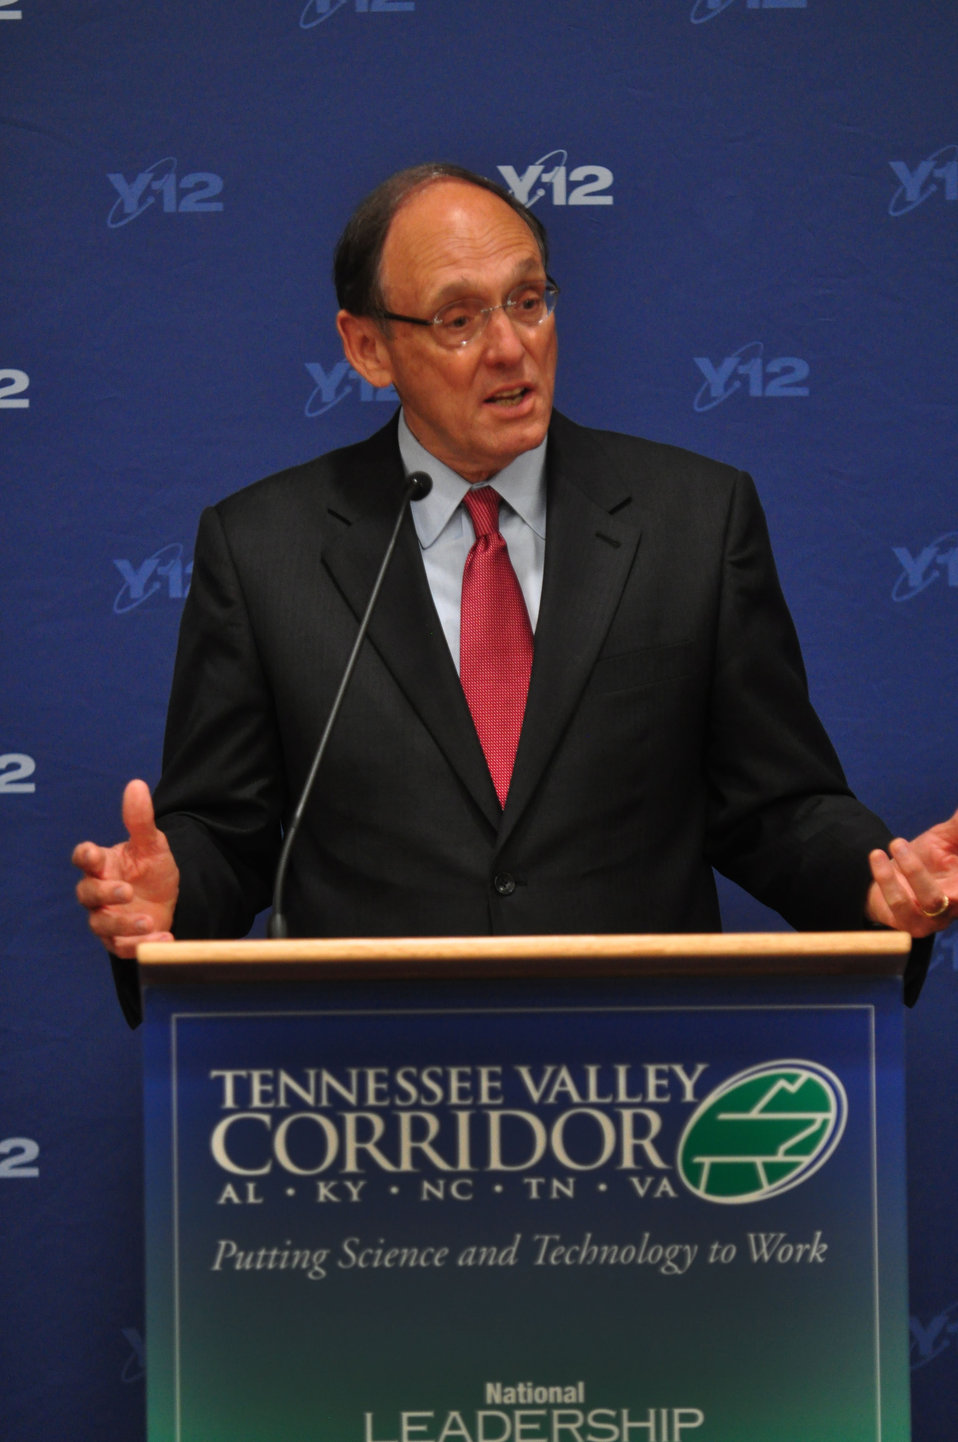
Congressman Phil RoeTennessee Valley Corridor Summit Oak Ridge

13-062 DOE photo Lynn Freeny 5-29-2013 Oak Ridge Tennessee